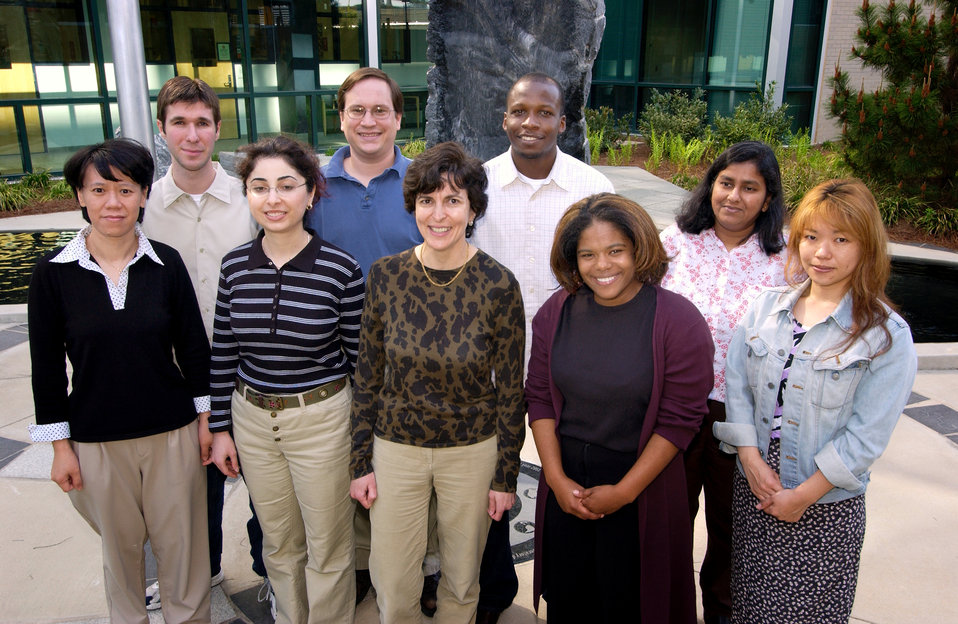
This photograph showed the Personal Care Products Laboratory staff: Back row (left to right) - Jason Tully, Jim Preau, John Ekong, Manori Silva. Front row (left to right) - Xiaoyun (Sherry) Ye, Ella Samandar, Antonia Calafat, Arnetra Herbert, Kayoko Kato. Members of the staff not pictured were Zsuzsanna (Susan) Kuklenyik, and Jack Reidy.